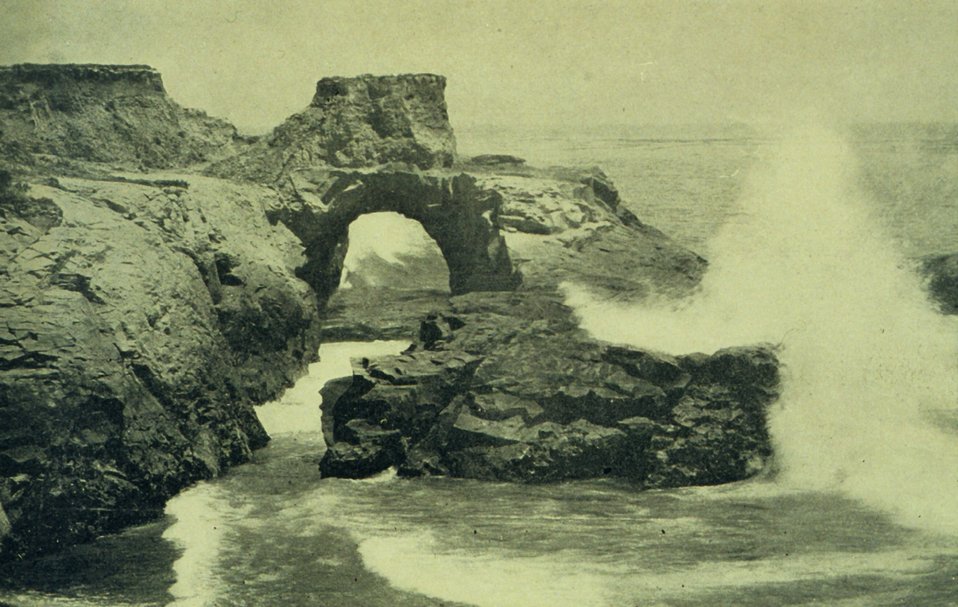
View on Cliff Drive, within city of Santa Cruz. This is probably on present day West Cliff Drive. In: 'The City of Santa Cruz and VicinityCalifornia.' Published by The Santa Cruz Board of Trade. 1905.